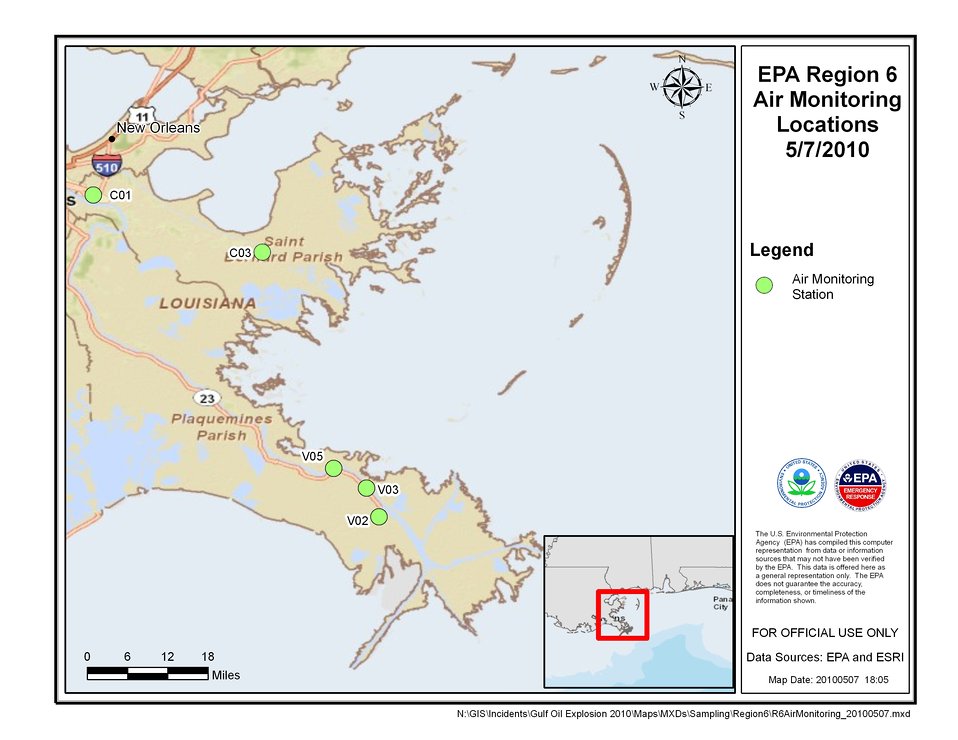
EPA Air Monitoring Locations May 7, 2010